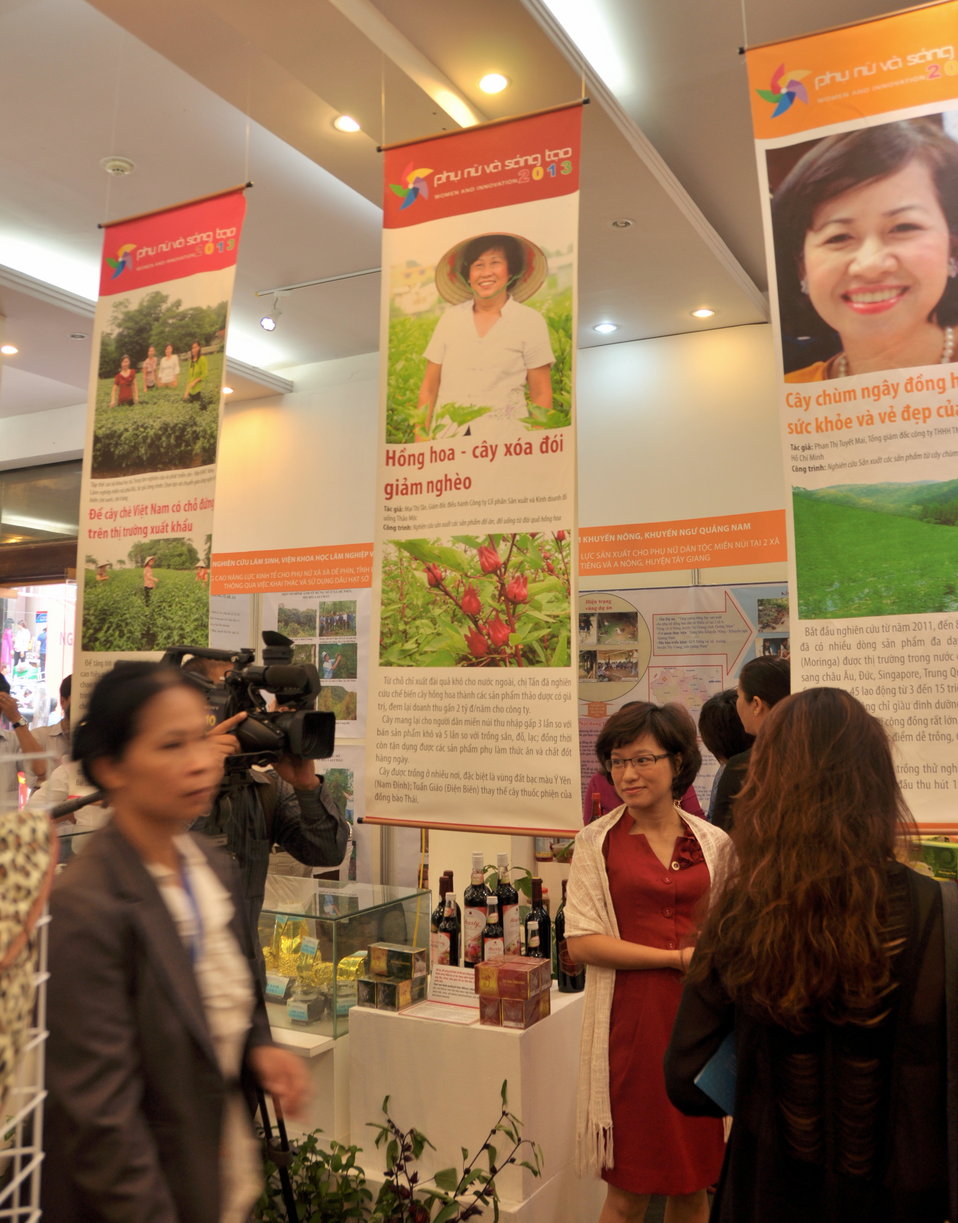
Vietnam Women Innovation Day 2013

Hanoi, October 1, 2013.